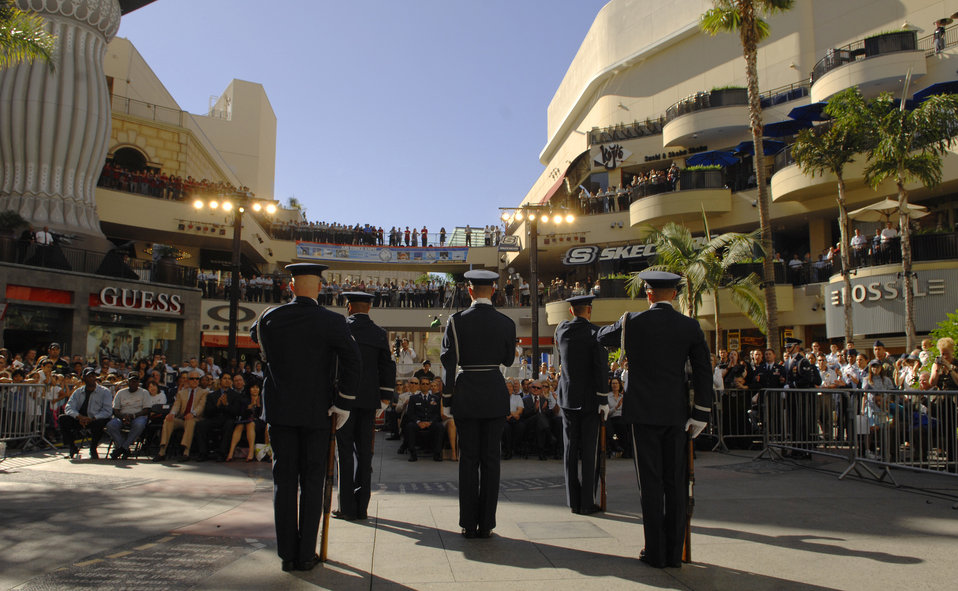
Air Force Week showcases people, missions

The Air Force Honor Guard Drill Team performs Nov. 14 at Hollywood and Highland in Los Angeles for the opening ceremonies for Air Force Week-Los Angeles. The drill team performance was one of many attractions at the event. Others included flyovers by several different Air Force aircraft, interactive expos and performances by the Air Force band. Air Force Week-Los Angeles is Nov. 14 to 21 and has events throughout the area.